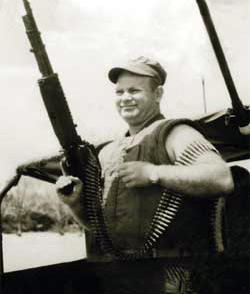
U.S. Heroes

Boatswain's Mate First Class James Williams stands aboard River Patrol Boat 105 in Vietnam.